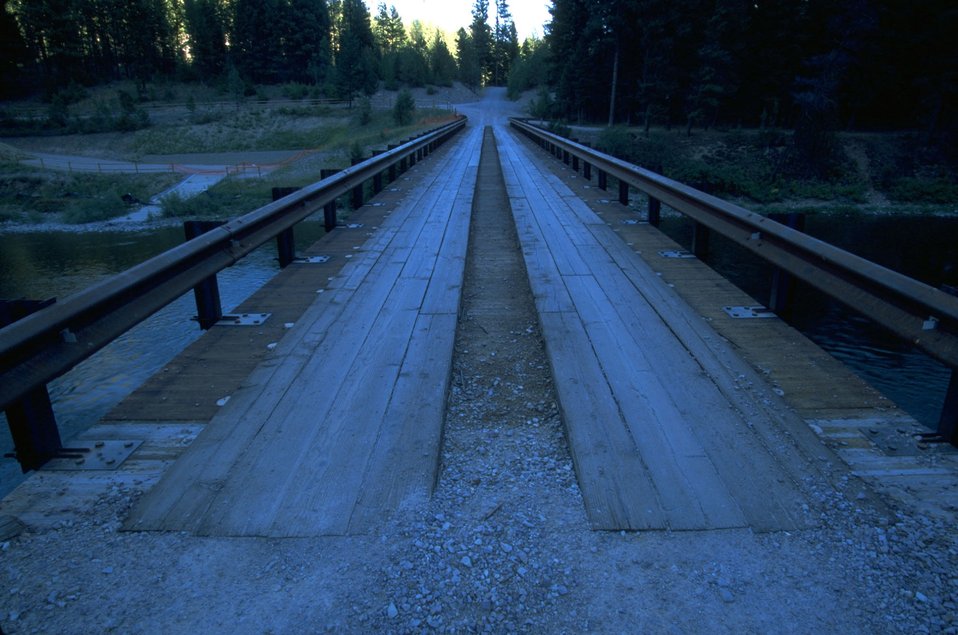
Whitaker Bridge on Blackfoot River